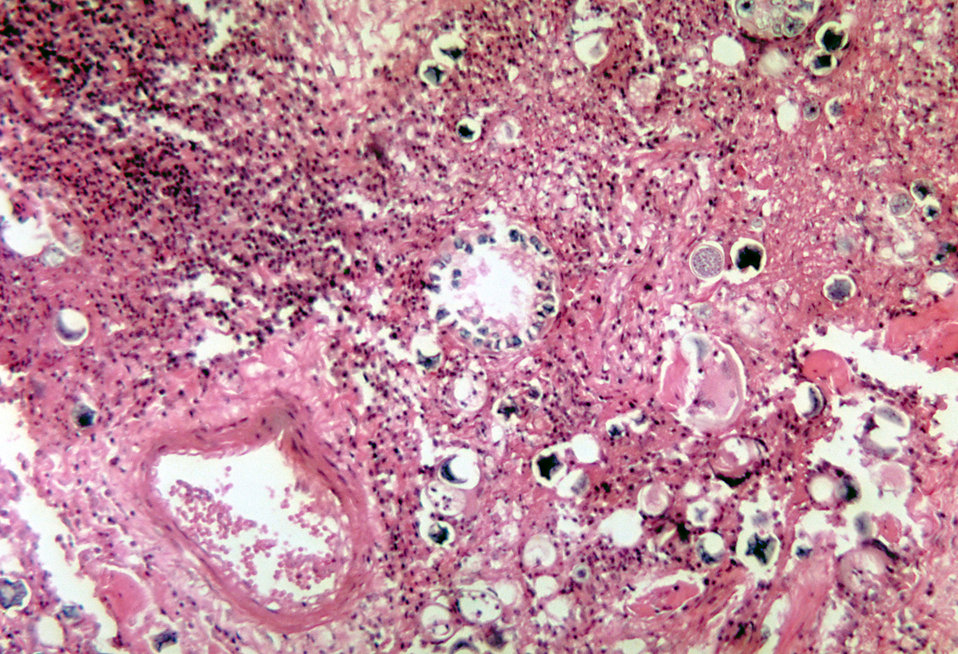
Using methenamine silver stain, this photomicrograph reveals spherules of Coccidioides immitis in brain tissue.